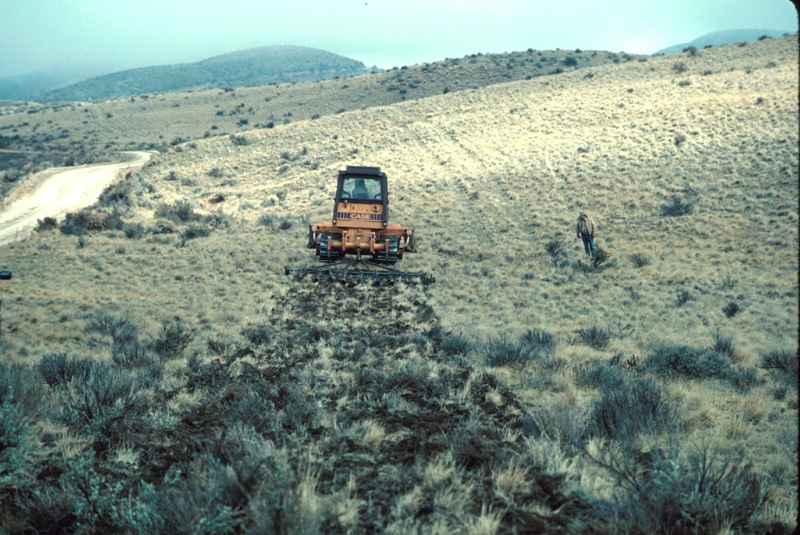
Harrow Foothills Fire Rehab Range Restoration Project Lower Snake River District